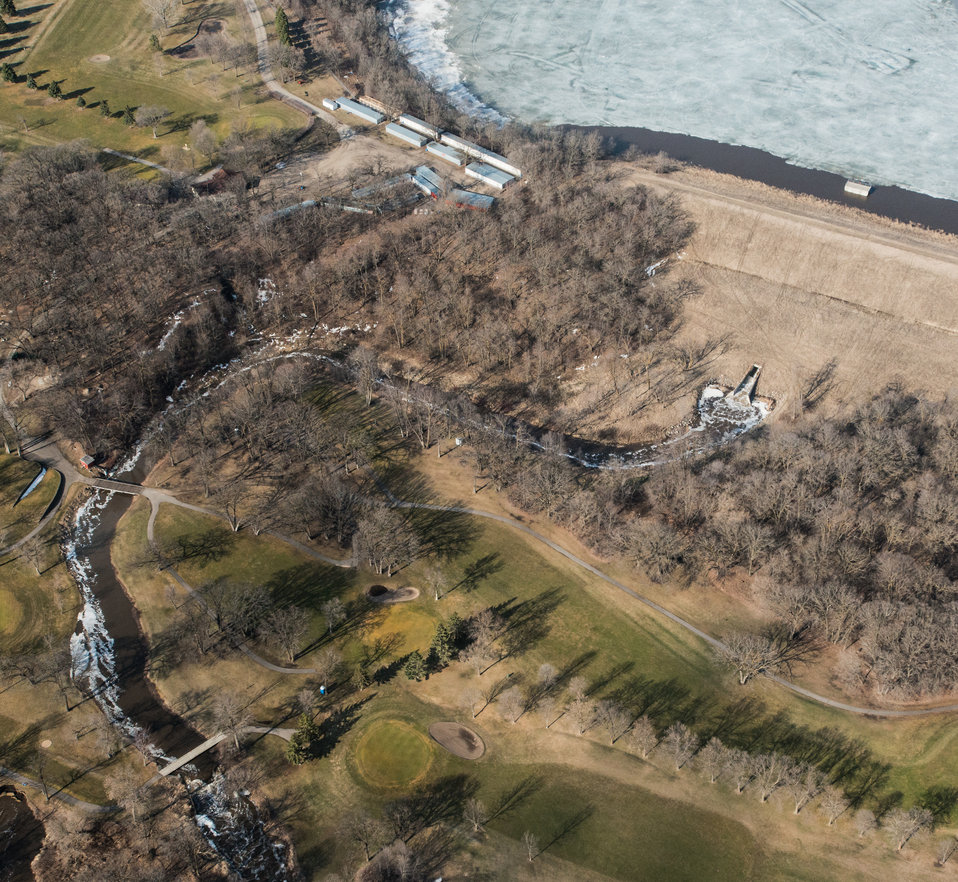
Larimore Dam, a Public Law PL83-566 Small Watershed Program, in Grand Forks County, ND, on Wednesday, May 1, 2013. A golf course bounds the outflow.